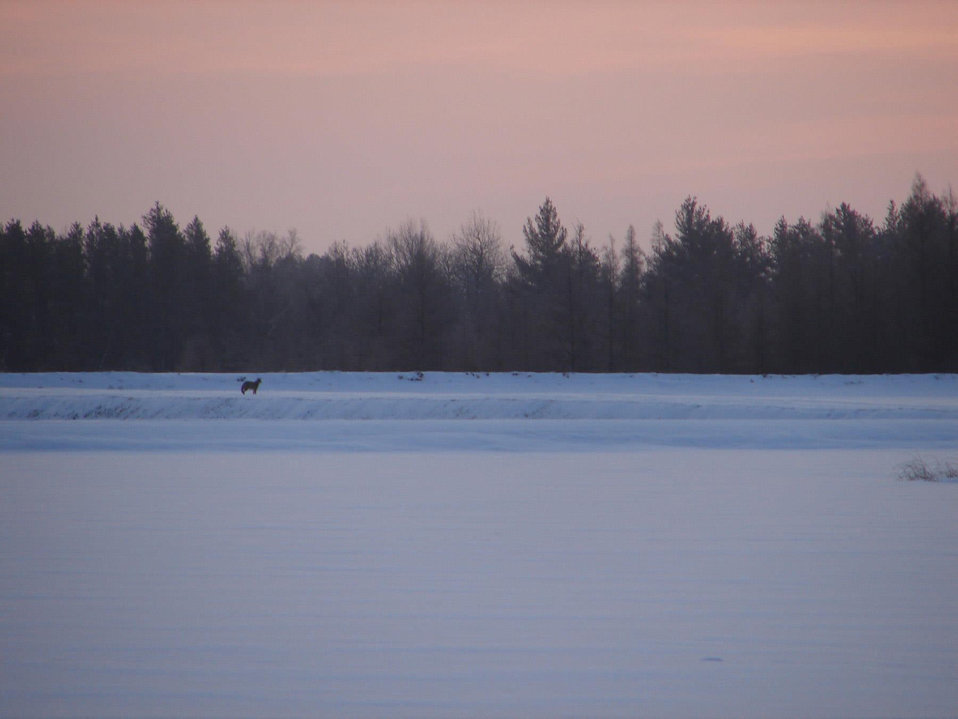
coyote before dawn

Necedah National Wildlife Refuge, WI
Jan. 14, 2012